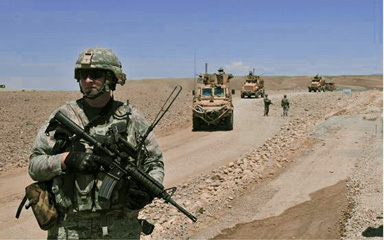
Watchful presence

Staff Sgt. John Kingsley provides security for Afghan Provisional Reconstruction Team engineers while coordinating communications July 6, 2010. Sergeant Kingsley is an NCOIC with the 628th Communications Squadron based out of Joint Base Charleston, S.C.